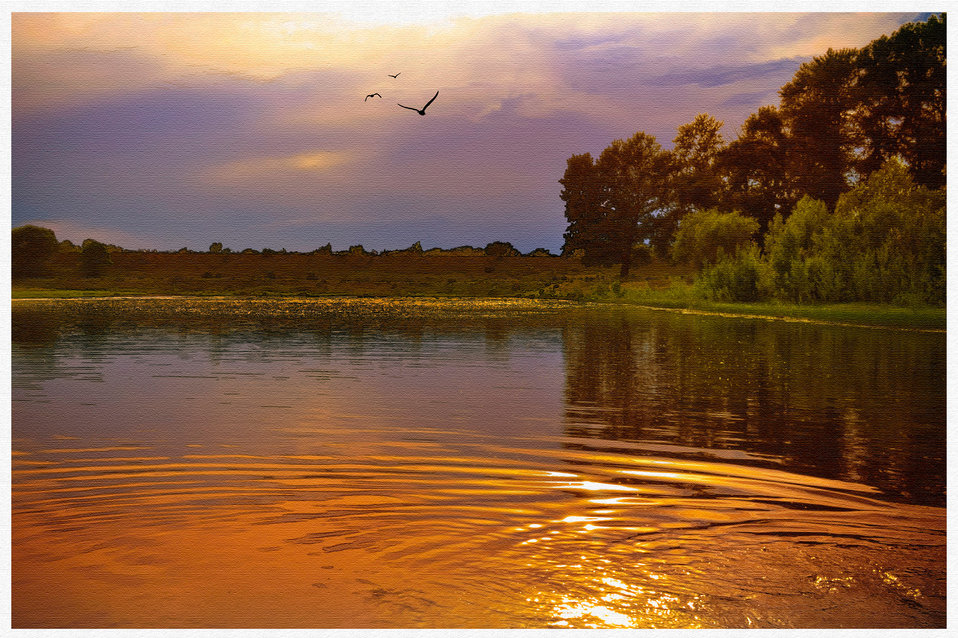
Landscape on canvas

Art processing of photos from the summer landscape.